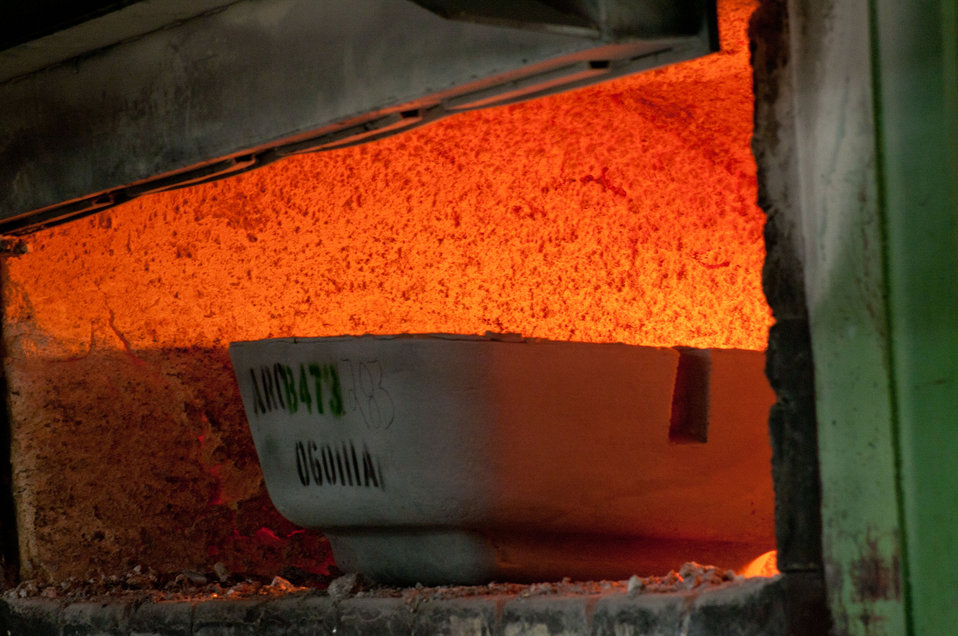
Melter begins to turn aluminum foundry ingots into molten metal at the Port City Group’s Port City Castings Corporation; a manufacturer of high-pressure aluminum die-castings, mostly for the automotive industry, in Muskegon, MI, facility on Wednesday July 20, 2011. Port City Group boosted its employment by 12 percent over last year thanks to two Rural Business Guaranteed Loans totaling $9.6 million. In its 80,000 sq. ft. facility, machines that range from 800 – 1,600 tons, and cast A380 aluminum alloy products from melted ingots of aluminum, into automotive components of U.S.A. made vehicles. The process features a variety of robotic presses; computer controlled machining; quality control facility; and complete measurement and testing laboratory. In 2009 banks were backing out of loans for PCG equipment purchase agreements. The U.S. Department of Agriculture (USDA) loan guarantee helped make the loan possible with its guarantee. PCG obtained the needed robotic and other equipment. This resulted in a stable workforce that has since grown. When asked about their USDA experience, Port City Group Sales Manager Laura LaGuire said, “It was great! They were very helpful. Everything that came up was handled smoothly, the money came in place when it was needed, and it was a very smooth transition.”